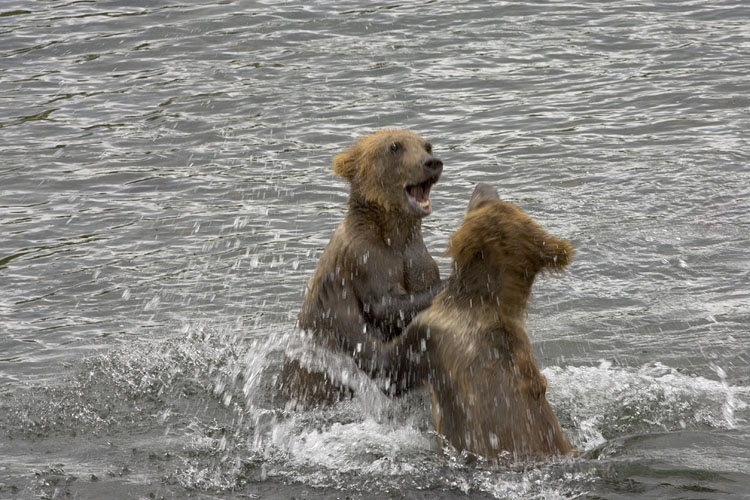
Wildlife of Kodiak Refuge

Playful Kodiak Bears